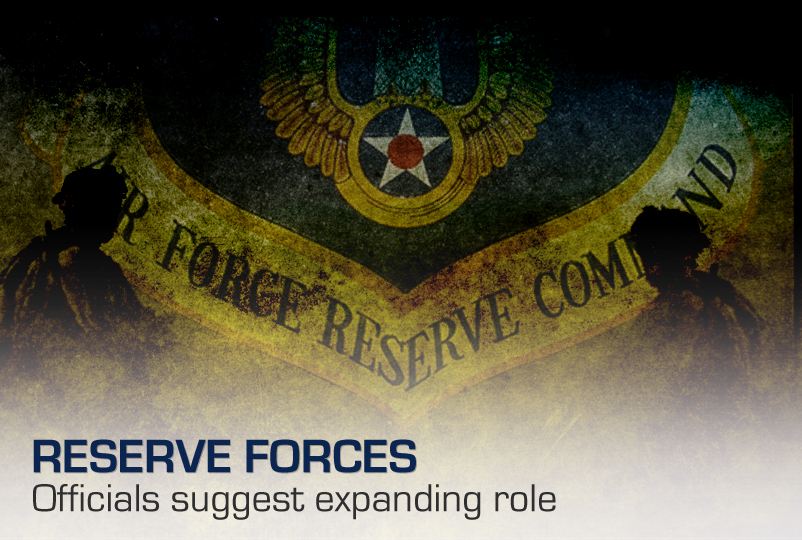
Reserve Forces